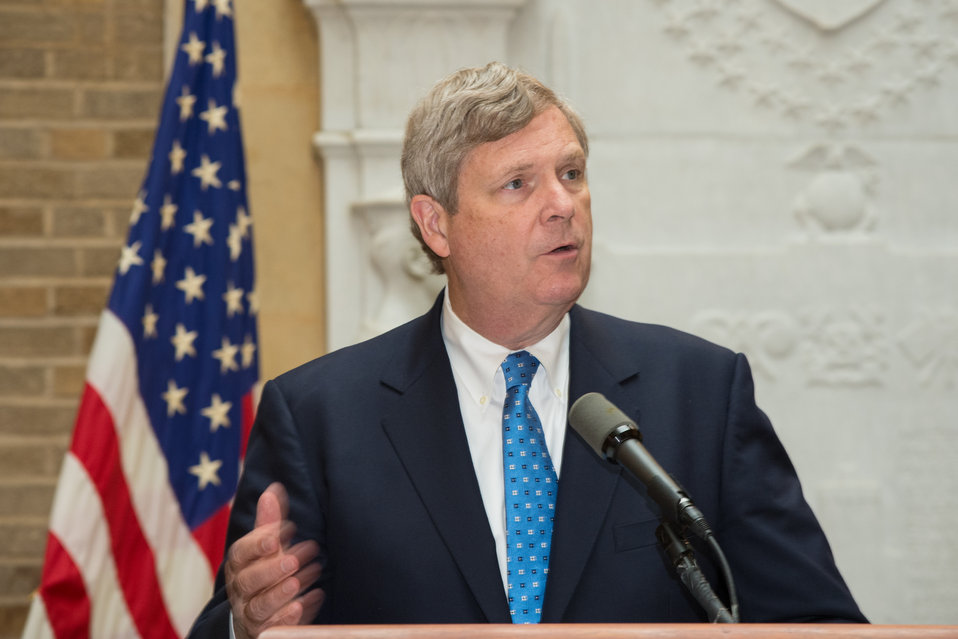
Agriculture Secretary Tom Vilsack offers his congratulations and appreciation to employees at the U.S. Department of Agriculture’s (USDA) Unsung Hero Awards at USDA in Washington, D.C. on Wednesday, May 7, 2014. USDA’s Organization of Professional Employees (OPEDA) in cooperation with USDA’s Departmental Management (DM) presented awards to employees who have demonstrated extraordinary effort in performing tasks, who have unselfishly shared time and expertise, and consistently and willingly extended a helping hand. They were also recognized for their contributions to transforming the culture of USDA.